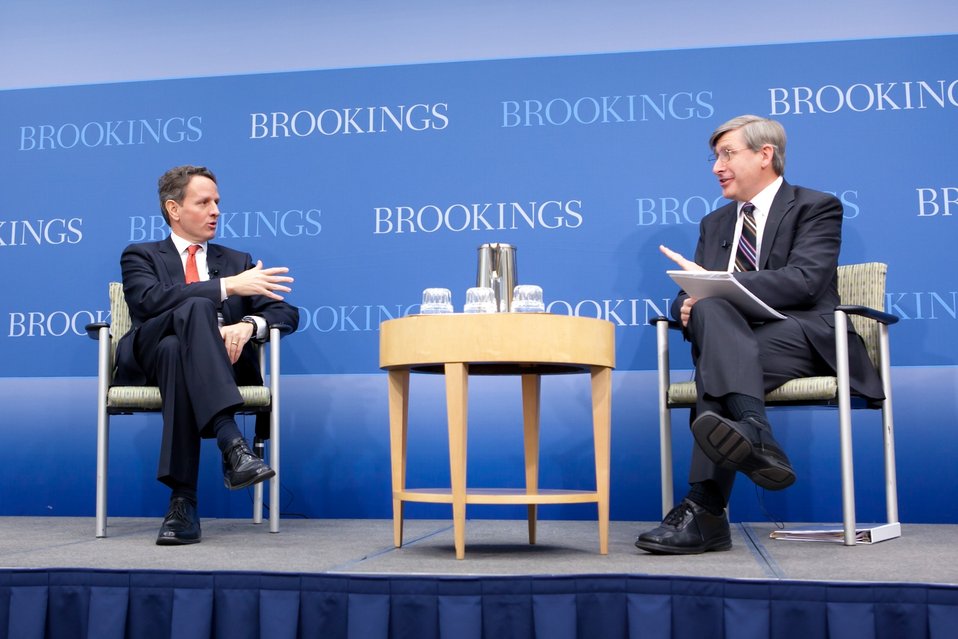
Secretary Geithner at the Brookings Institution, 02/11/2011

On Friday, February 11, 2011, Secretary Geithner participated in a question and answer session with Martin Baily, Senior Fellow of Economic Studies, at the Brookings Institution’s forum on “Restructuring the U.S. Residential Mortgage Market,' where he discussed the Administration's report on reforming our nation's housing finance market.